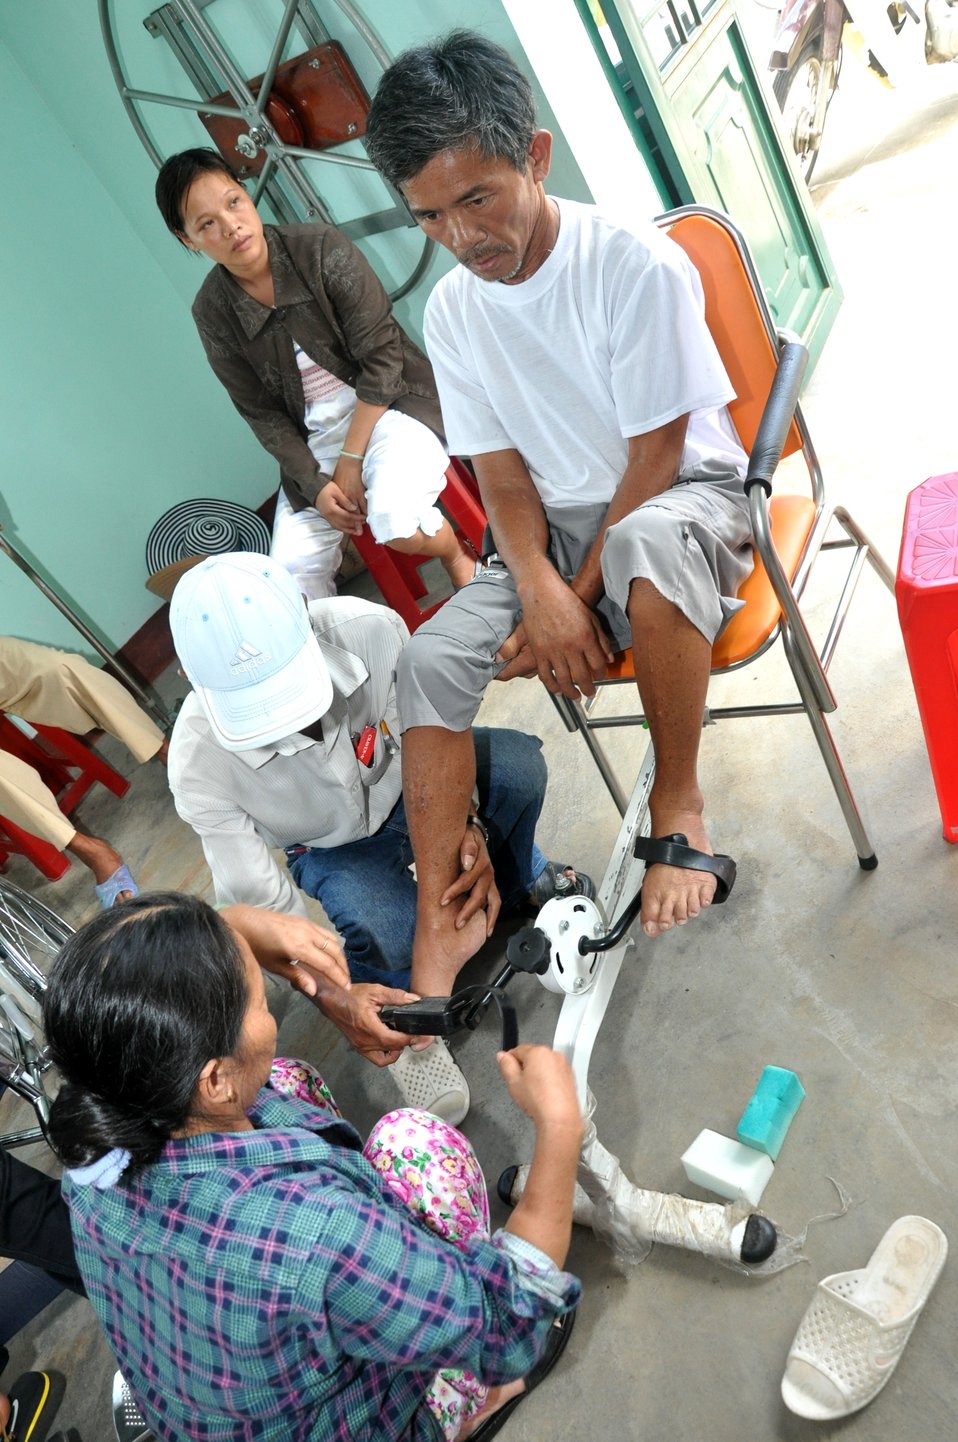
USAID supports a community rehabilitation unit in Danang.

Danang, June 10, 2013.